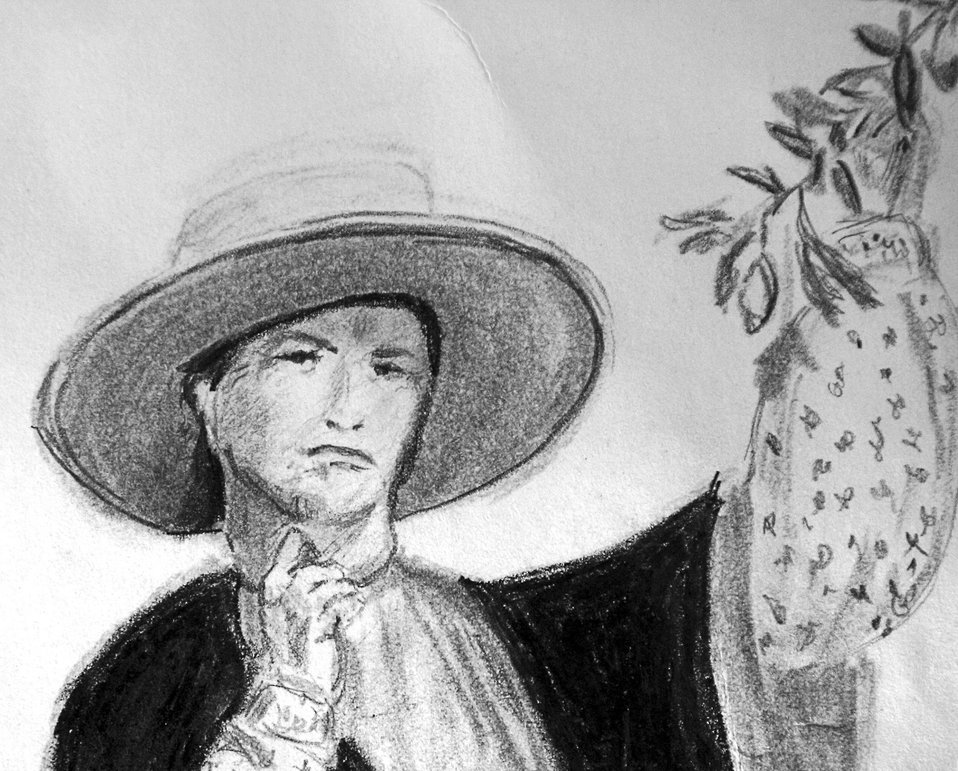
Character artwork by Sarah LeCompte for Nancy Harms's "From Spinning Wheels to Wagon Wheels".